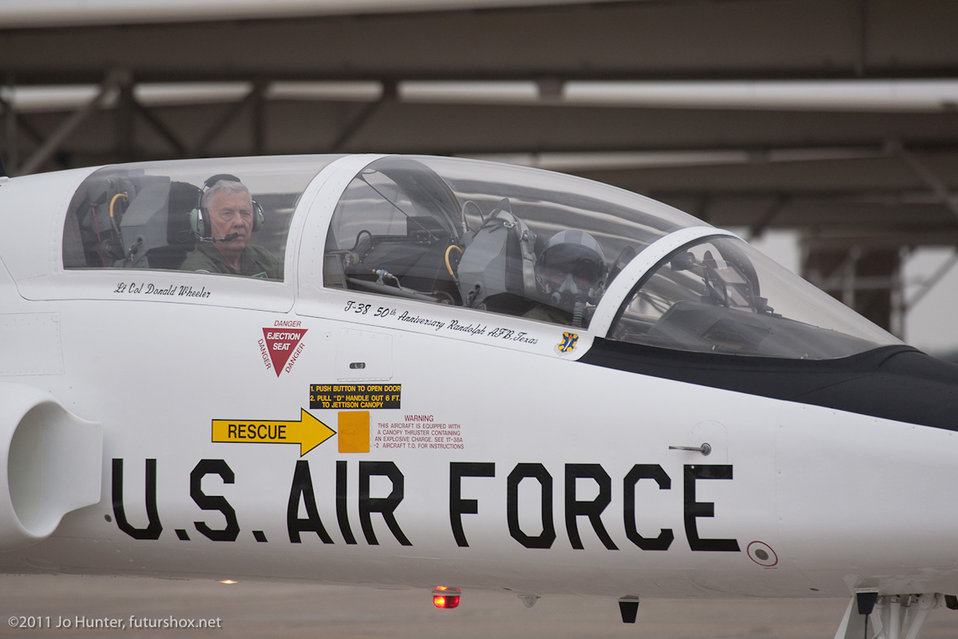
T-38

Retired Lt. Col. Donald Wheeler (left) rides in the rear seat of a T-38 Talon, as it comes to a stop March 17, 2011, on the flightline at Randolph Air Force Base, Texas. This T-38 has been painted with a special commemorative color scheme, giving the plane an appearance similar to its original 1961 look. Colonel Wheeler was a member of the first class of pilots to train on the T-38. He graduated in 1962.